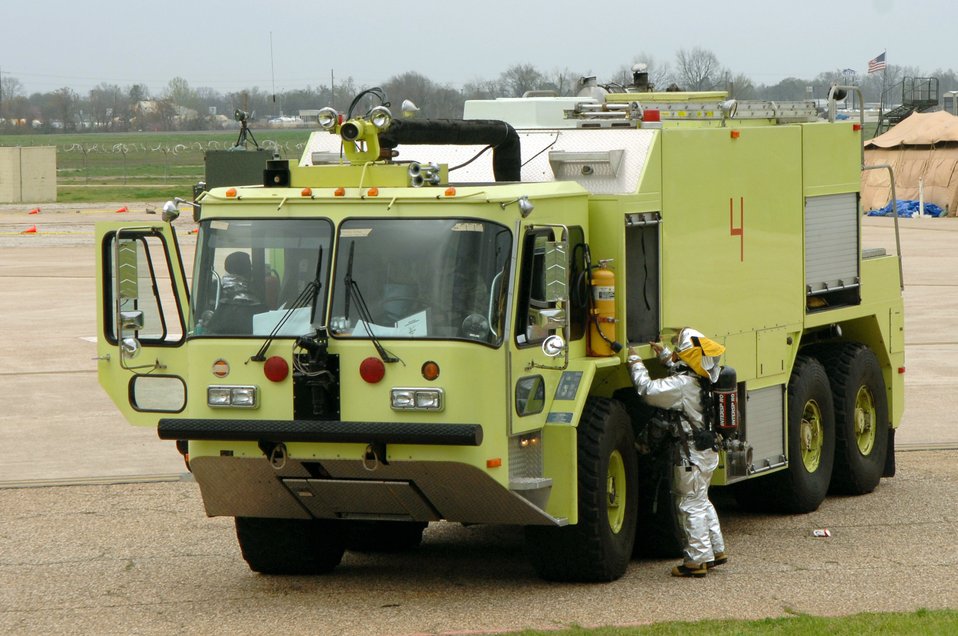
Global Cajun 07-2

Airman Michael Ramos grabs a tool from a storage compartment on the outside of a fire truck Feb. 12 during a Conventional Operational Readiness Exercise at Barksdale Air Force, La. Airman Ramos is working in support of Global Cajun 07-2 exercise.